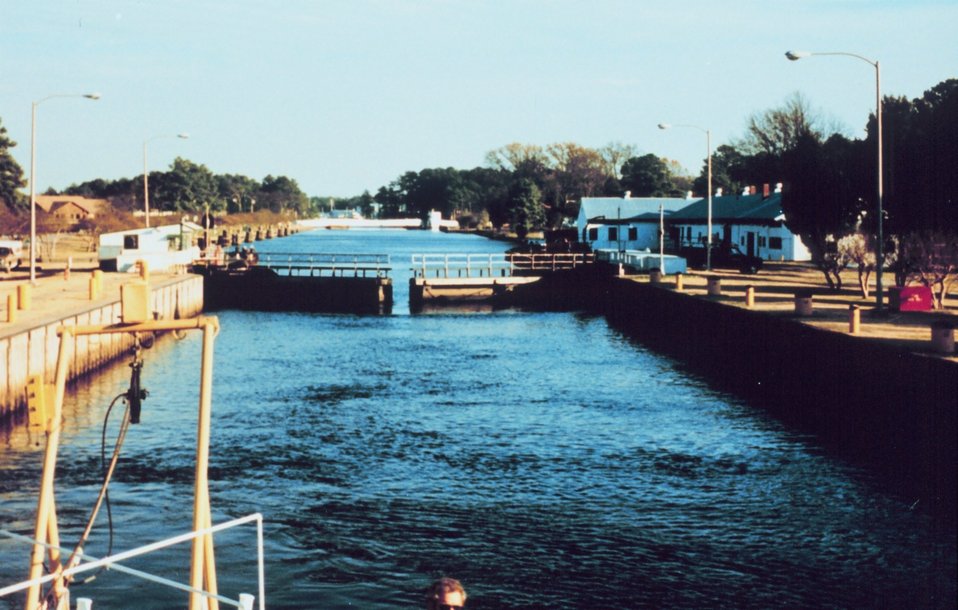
Locks south of Norfolk on Intracoastal Waterway